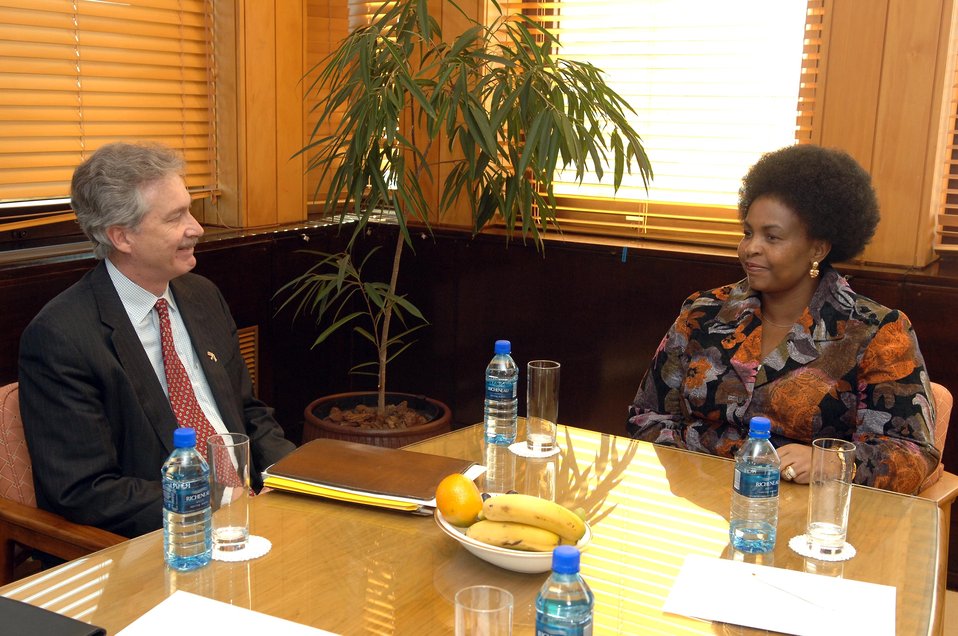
South Africa Foreign Minister Nkoana-Mashabane Meets With Under Secretary William J. Burns

South African Foreign Minister Nkoana-Mashabane meets with U.S. Under Secretary for Political Affairs William J. Burns in Cape Town, South Africa, April 23, 2010.